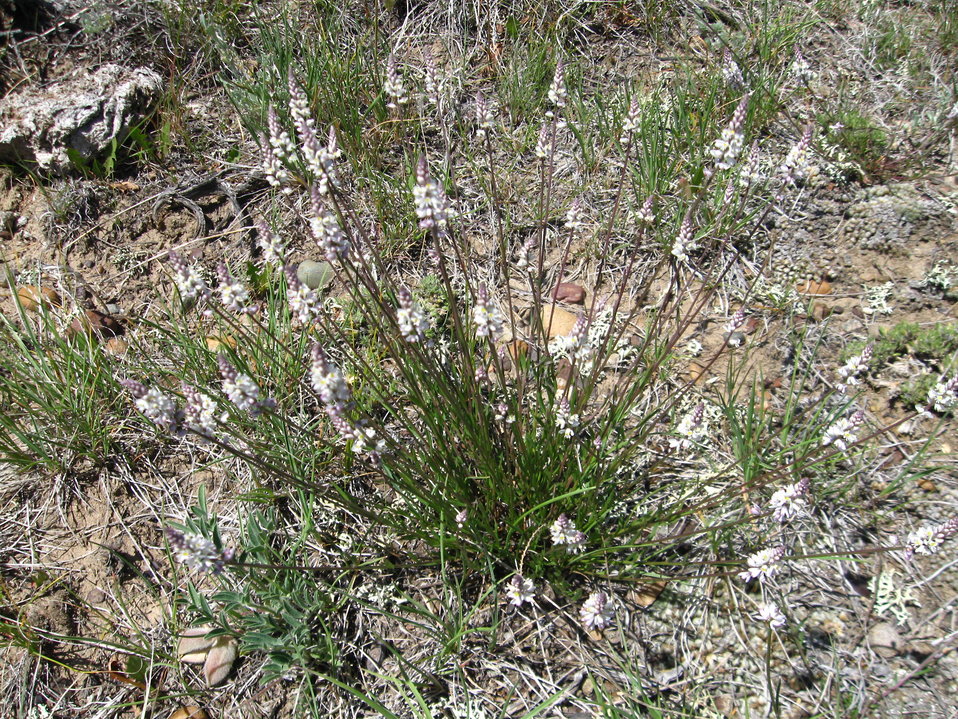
White Milkwort

Used as medicine for snakebite by Native Americans, this plant flowers in June and July.